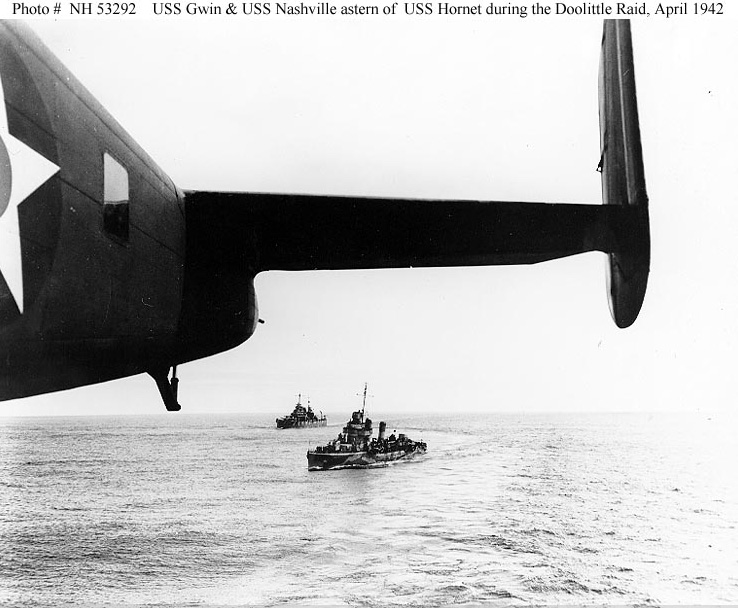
Doolittle's Raid

USS Gwin (DD-433) approaches USS Hornet (CV-8) from astern, with USS Nashville (CL-43) beyond, while en route to the mission's launching point.
The ships are framed by the tail of a U.S. Army Air Forces B-25B, parked on the rear of the carrier's flight deck.